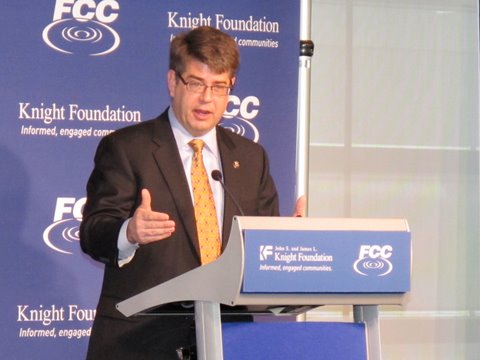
U.S. Congressman Lee Terry (R-Nebraska) addresses America's Digital Inclusion Summit at The Newseum, March 9, 2010.